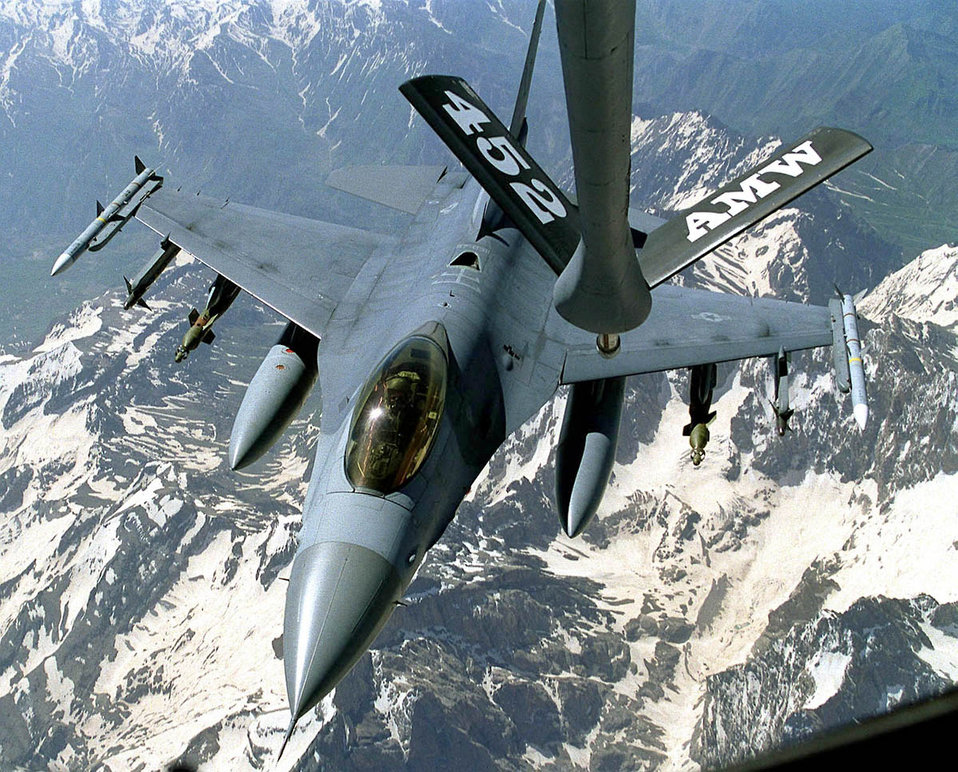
Thirsty Falcon

OPERATION NORTHERN WATCH -- An Air Force F-16 Fighting Falcon approaches the refueling boom of a KC-135 Stratotanker from the 336th Expeditionary Air Refueling Squadron during a mission enforcing the no-fly zone in northern Iraq. Personnel and aircraft from the 336th ARS, March Air Reserve Base, Calif.; and the 18th ARS, McConnell Air Force Base, Kan., are deployed at Incirlik Air Base, Turkey, as the 336th EARS, providing aerial refueling support for Operation Northern Watch.